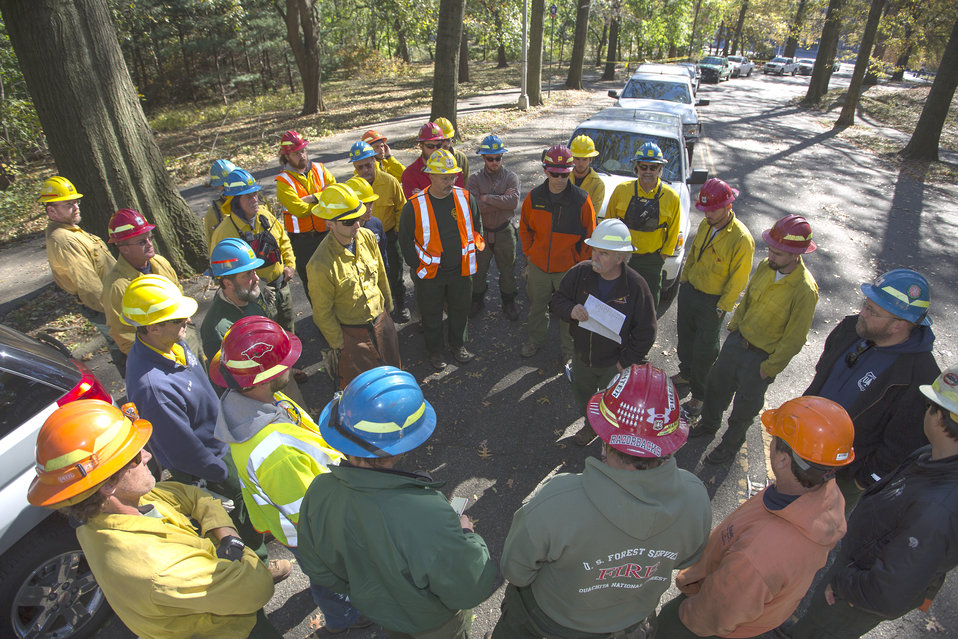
U.S. Forest Service (USFS) Safety Officer Steve Smestad conducts a safety briefing for chain saw crews in Forest Park, Queens, NY, on Nov. 4, 2012. New York officials requested support from the U.S. Forest Service through the Federal Emergency Management Agency (FEMA) to assist clearing the parks of downed trees in order to make passage safe for local residents. Multiple USFS crews from all over the country responded following the destruction caused by Hurricane Sandy. They included Ohio, Arkansas, Virginia, and Illinois.